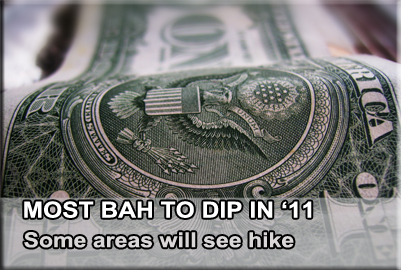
BAH rates

Some BAH Rates to Drop in 2011